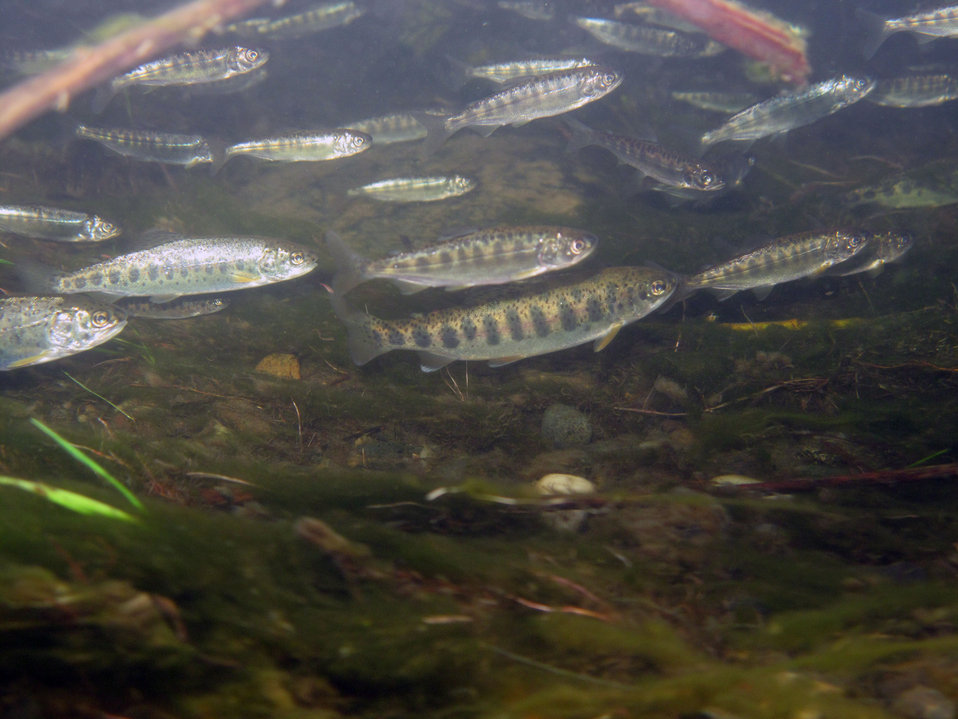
Chinook Salmon (Oncorhynchus (=salmo) tshawytscha)

USFWS Headquarters
Status: Endangered and Threatened (lower American River)